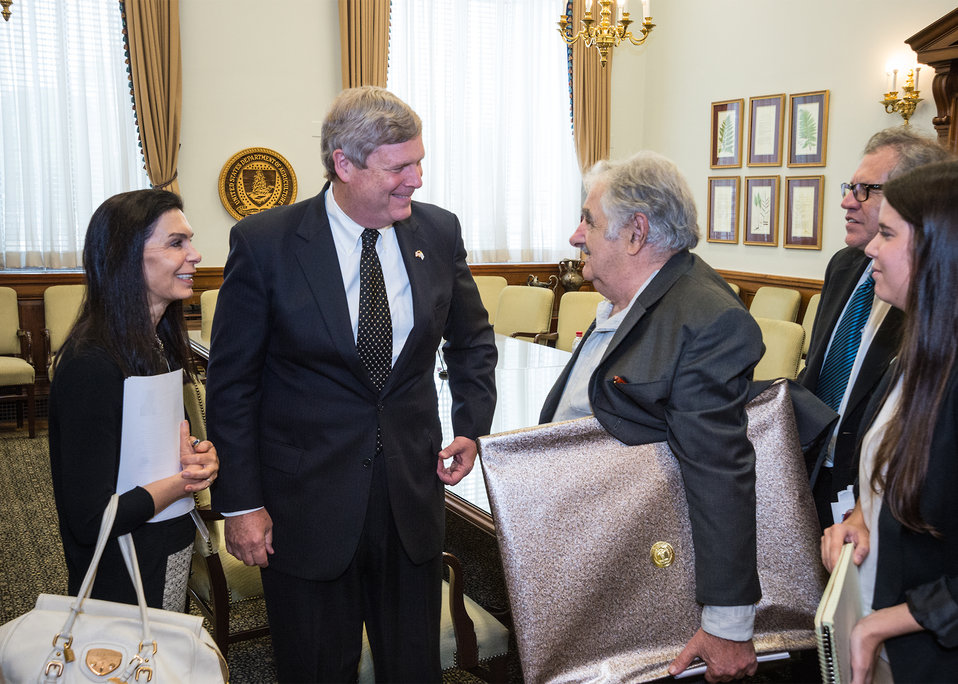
Agriculture Secretary Tom Vilsack presents a gift to Uruguay President Jose Mujica after their discussion on cooperation in agricultural research, production and climate changes on agriculture at the U.S. Department of Agriculture (USDA) in Washington, D.C. on Wednesday, May 14, 2014.